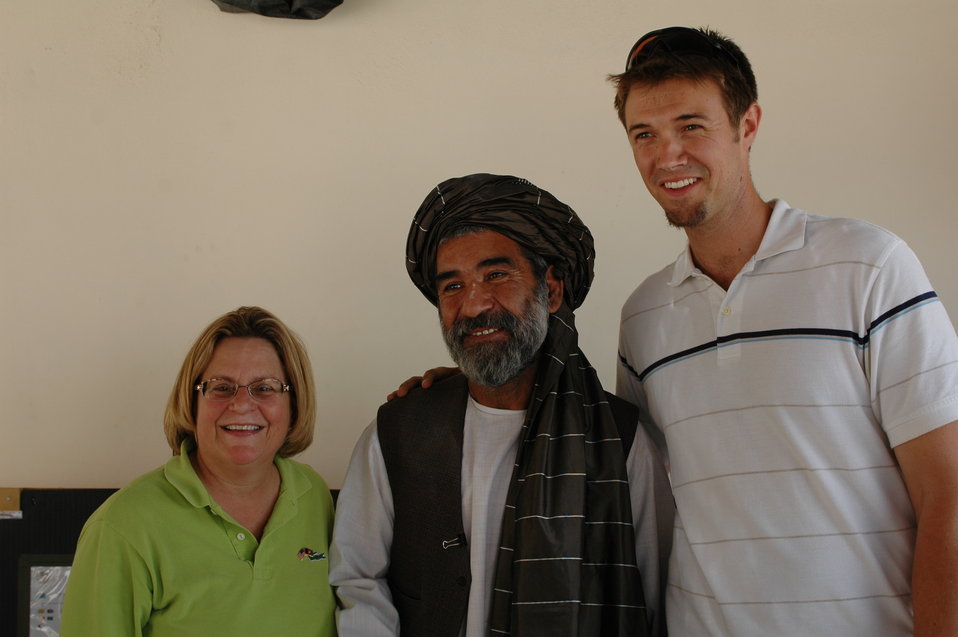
CODEL Berman